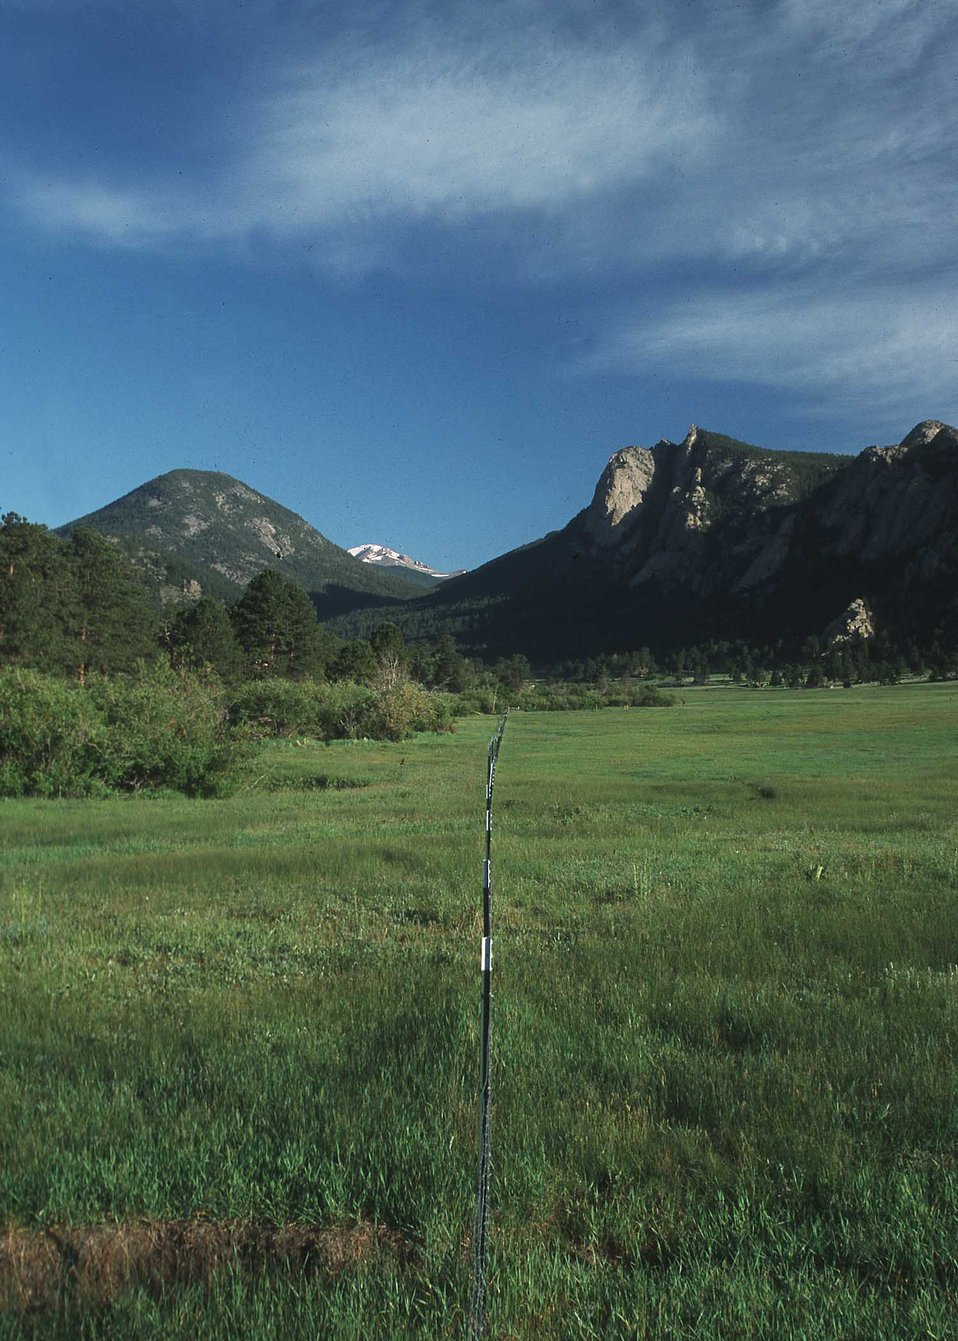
Riparian Pasture-Spanish Peaks area, CO.